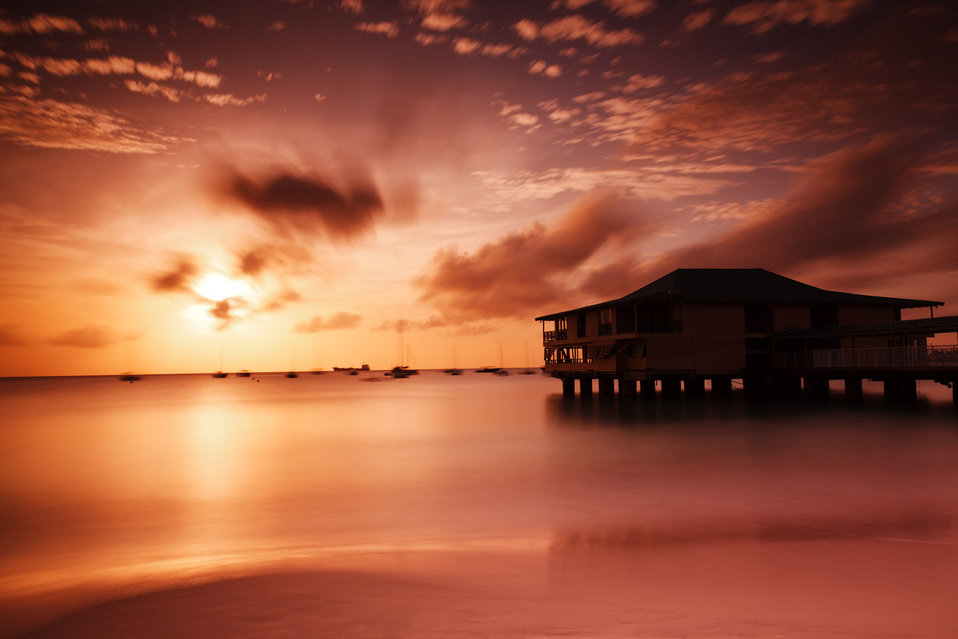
Sunset in harbor

Orange sunset at grand barbados beach using big stopper filter.